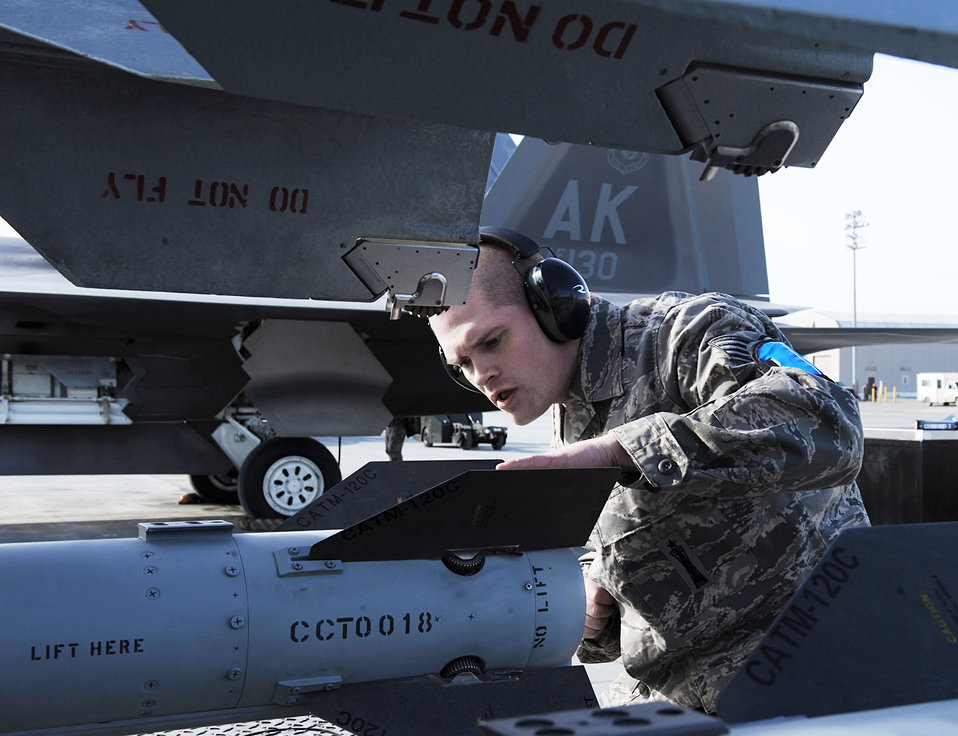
Getting it right

Staff Sgt. Coel Lewis ensures that a fin is properly installed on an Air Intercept Missile-120 before loading it April 2, 2010, on an F-15 Eagle at Elmendorf Air Force Base, Alaska. Sergeant Lewis is an aircraft armament specialist with the 19th Aircraft Maintenance Unit.